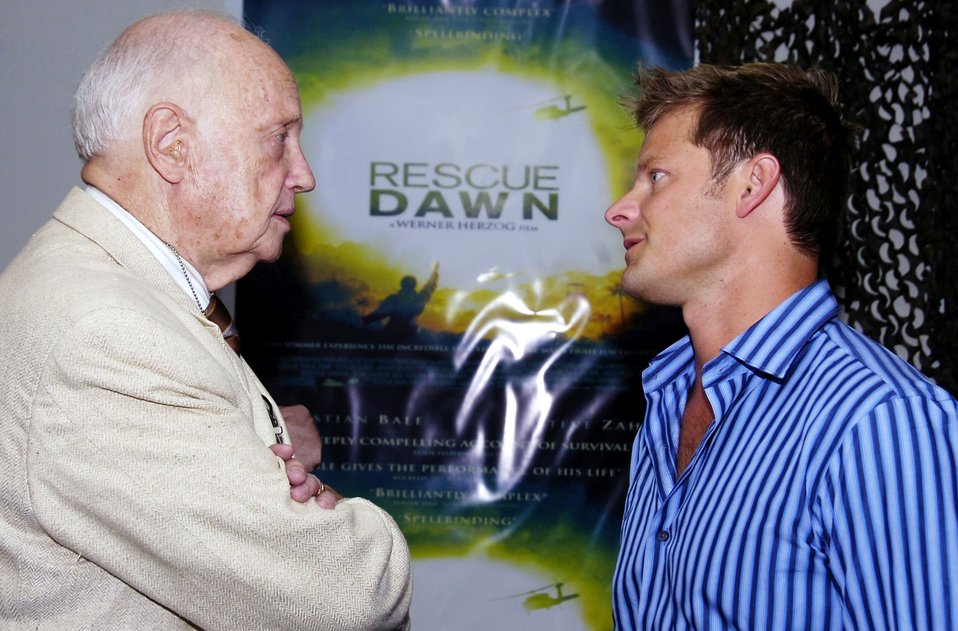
'Rescue Dawn' premiere inspires

Retired Air Force Col. Eugene Deatrick, left, who rescued Navy Lt. Dieter Dengler, a POW during the Vietnam War, chats with Steve Zahn, who plays Air Force 1st Lt. Duane Martin in the movie